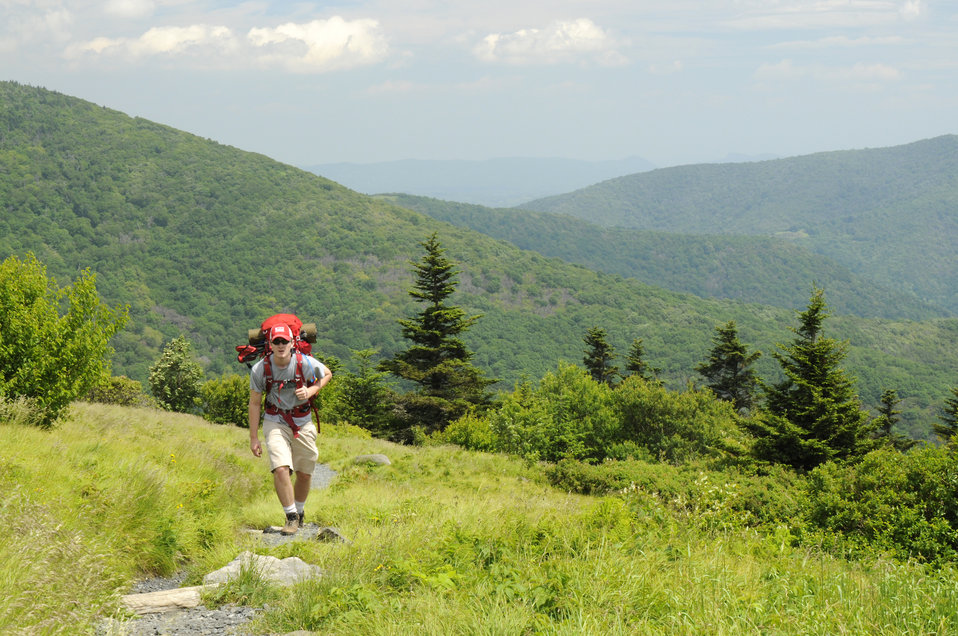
A visitor to a National Forest in North Carolina enjoys hiking through the wilderness on June 22, 2009. National Forests offer visitors access to a diversity of outdoor recreational opportunities such as hiking, biking, riding horses, driving off-highway vehicles, picnicking, camping, hunting, fishing, rock climbing, and navigating waterways. Visitors can view wildlife, scenic vistas, and explore historic places.